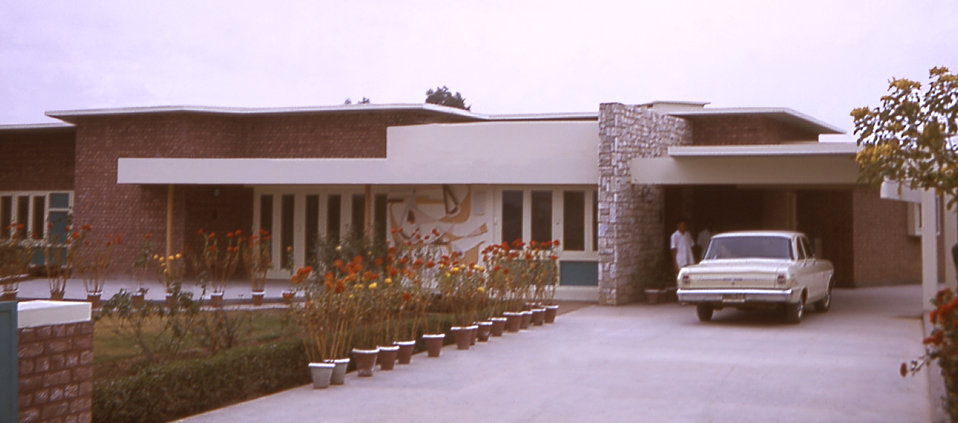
This was a 1964 photograph of the Woodward House in Lahore, West Pakistan, before the country became known as Pakistan in 1971.